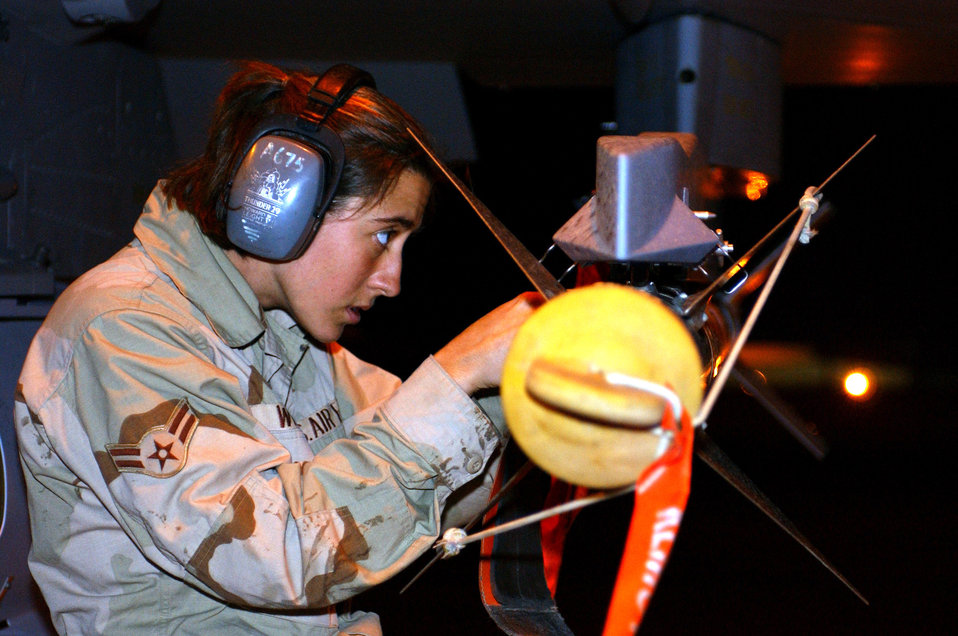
Wetmore

OPERATION IRAQI FREEDOM -- Airman 1st Class Christine Wetmore secures munitions on a fighter aircraft at a forward-deployed Operation Iraqi Freedom location March 25. Coalition aircraft have been flying more than 1,500 sorties a day since launching Operation Iraqi Freedom.